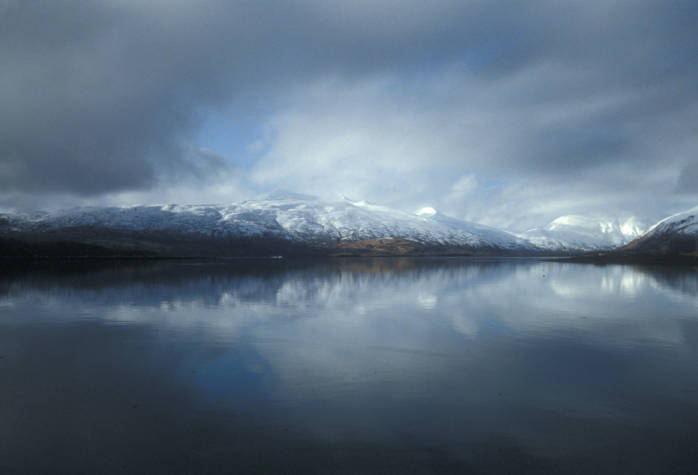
Womens Bay

Alaska Maritime National Wildlife Refuge